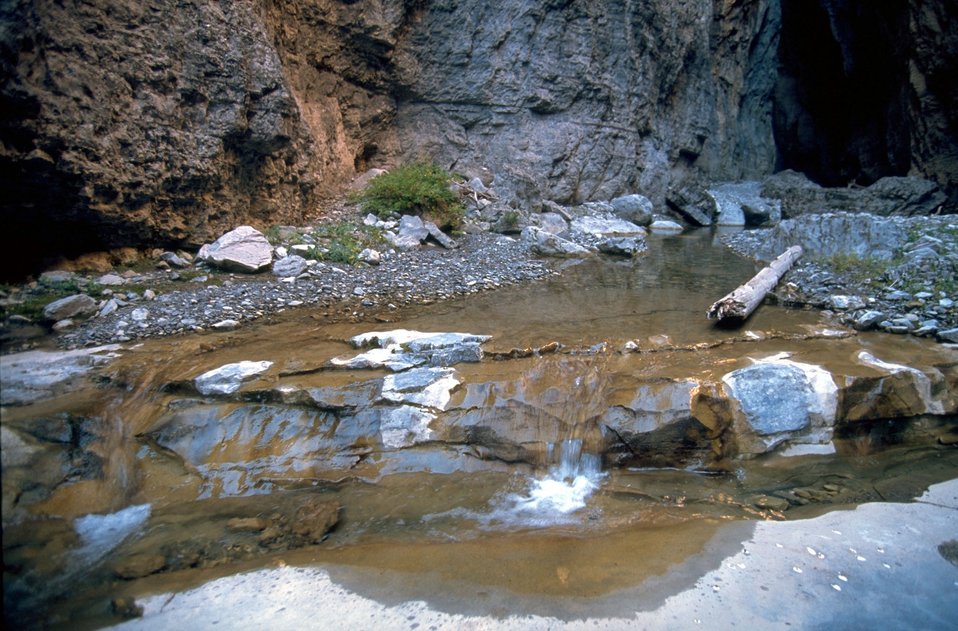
Looking west at Muddy Creek in the Rocky Mountain Front